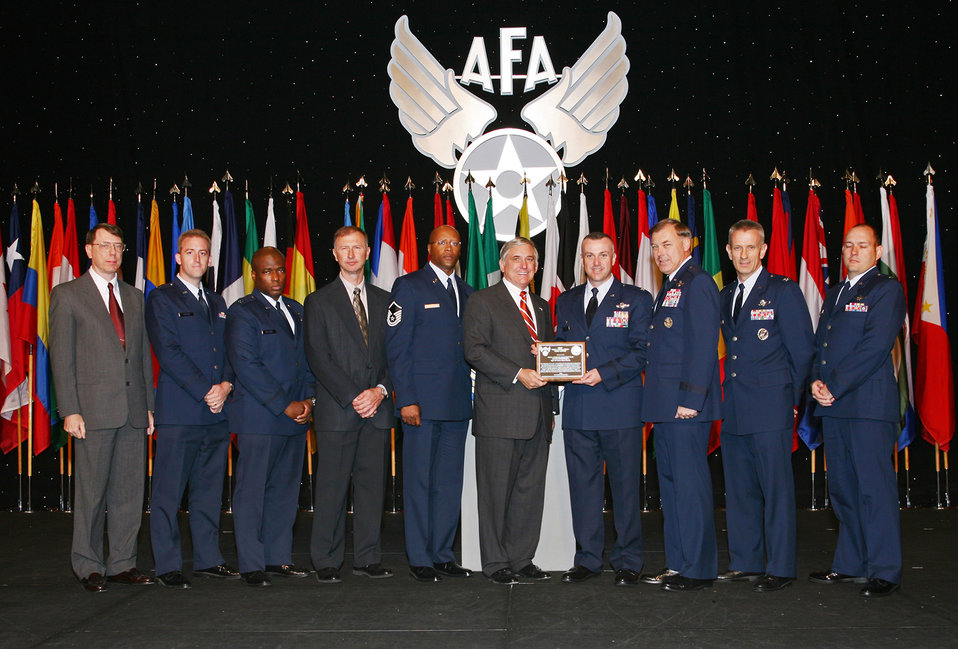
Eglin test team receives national award

The Air Force Operational Test and Evaluation Center's Small Diameter Bomb Test Team receives the Air Force Association's 2007 Test and Evaluation Team of the Year Award. The AFOTEC Det. 2 team, based at Eglin Air Force Base, Fla., received the award Sept. 24 at the Air & Space Conference and Technology Exposition in Washington. Pictured from left to right are: retired Col. Dan Grenier, the former AFOTEC Det. 2 commander; team members Capt. Robert Harder, Capt. Craig Williams, Roger Floyd and Master Sgt. Anthony Kage; Robert Largent, the AFA chairman of the board; Col. Tom Bell, the AFOTEC Det. 2 commander; Maj. Gen. Stephen Sargeant, the AFOTEC commander; and team members Col. Chris Choate, and Maj. Charles Williams.